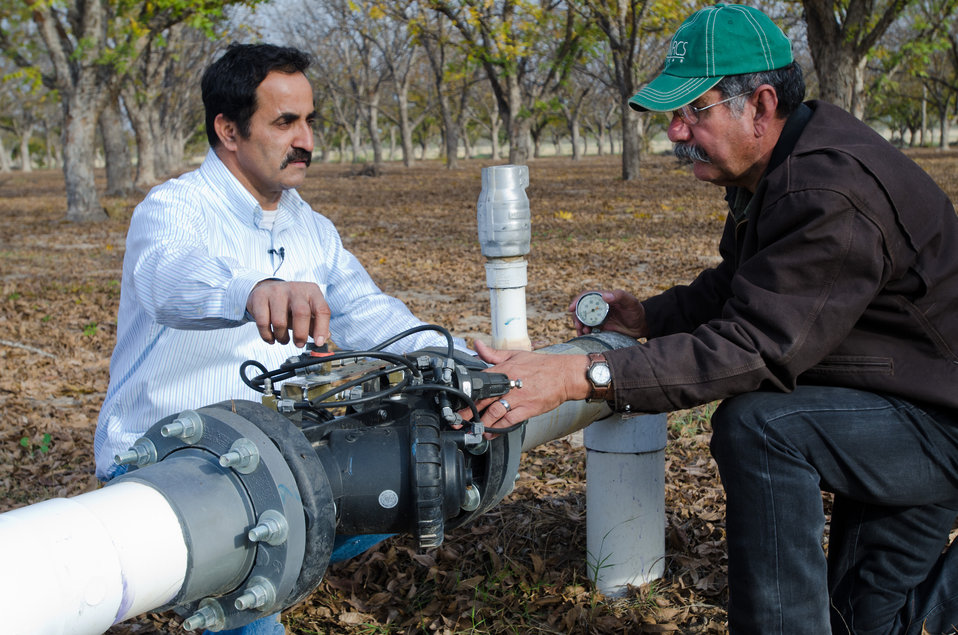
Arrowhead Farms owner Mr. Akram Mohammad (left) talks with Natural Resources and Conservation Service (NRCS) District Conservationist J.M. Villarreal (right) about the pressure control valves used at the pecan farms in Crystal City, TX, on Friday, December 9, 2011. The 719 acre farm with 10,000 trees, features two orchards with underground micro irrigation system that feeds water to the roots of 4,380 pecan trees on 146 acres. Mr. Mohammad said, “USDA (U.S. Department of Agriculture) was essential to my business and trees surviving the recent exceptional drought. The trees were stress free thanks to underground micro-irrigation. This is essential to the future growth of Texas agriculture and good for America.” U.S. Department of Agriculture’s (USDA) Environmental Quality Initiative Program (EQIP) awarded Mr. Mohammad a $130,000 grant in 2008. He provided $26,000 for the balance of the $156,000 total cost to install a 146-acre underground micro-irrigation for 4,380 trees.